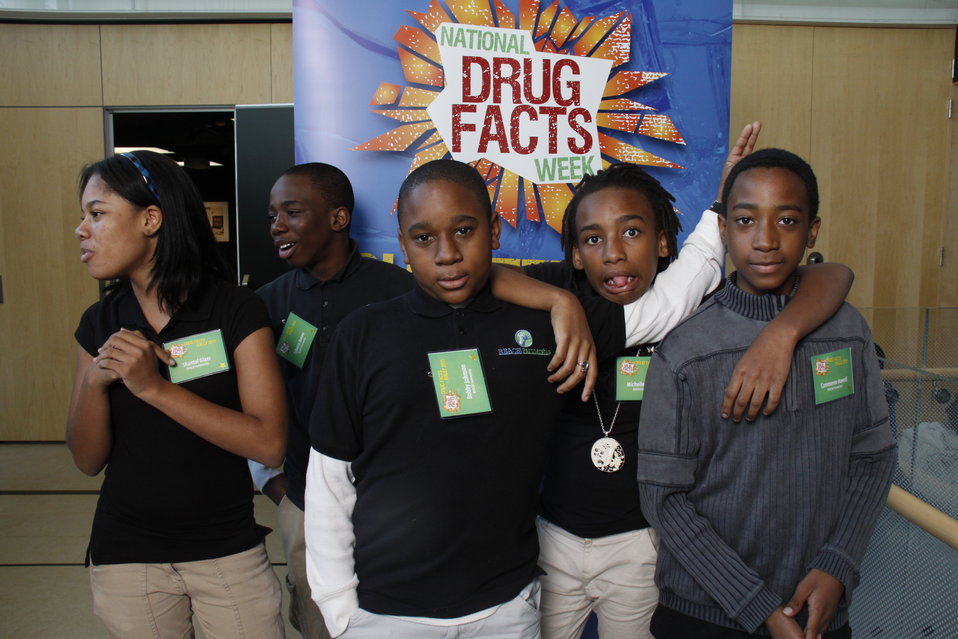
NDFW Mentor Event